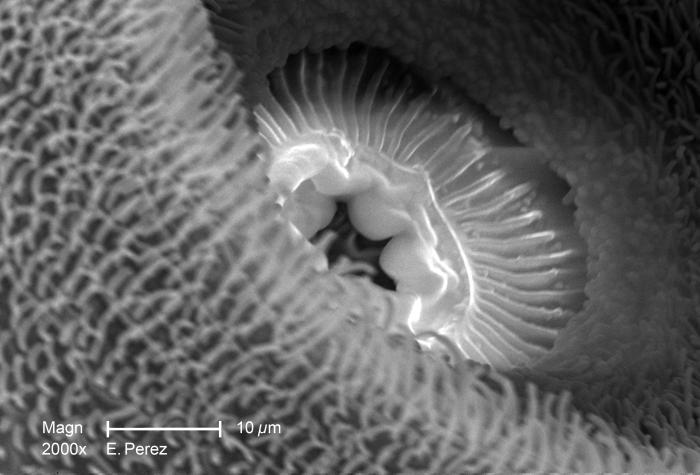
This is the third of three scanning electron micrographs (SEM) at successively higher magnifications revealing in greater and greater detail, the morphology of the 'scape', or the first segment of this unidentified mosquito's left antenna (see PHIL 10553 and 10554). Magnified 2000X, which is twice that of 10554, you'll note that the central region of the scape is concave, and it's into this concavity that the second segment of the antenna, known as the 'pedicle', will interlock.